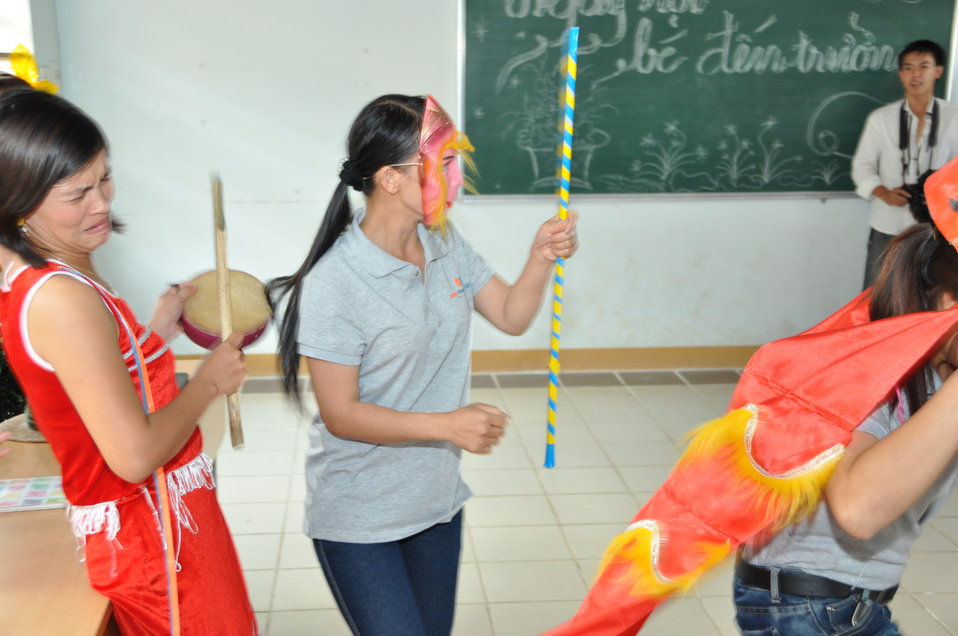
USAID and EMW support teacher training for young ethnic minority children in Kon Tum, Vietnam